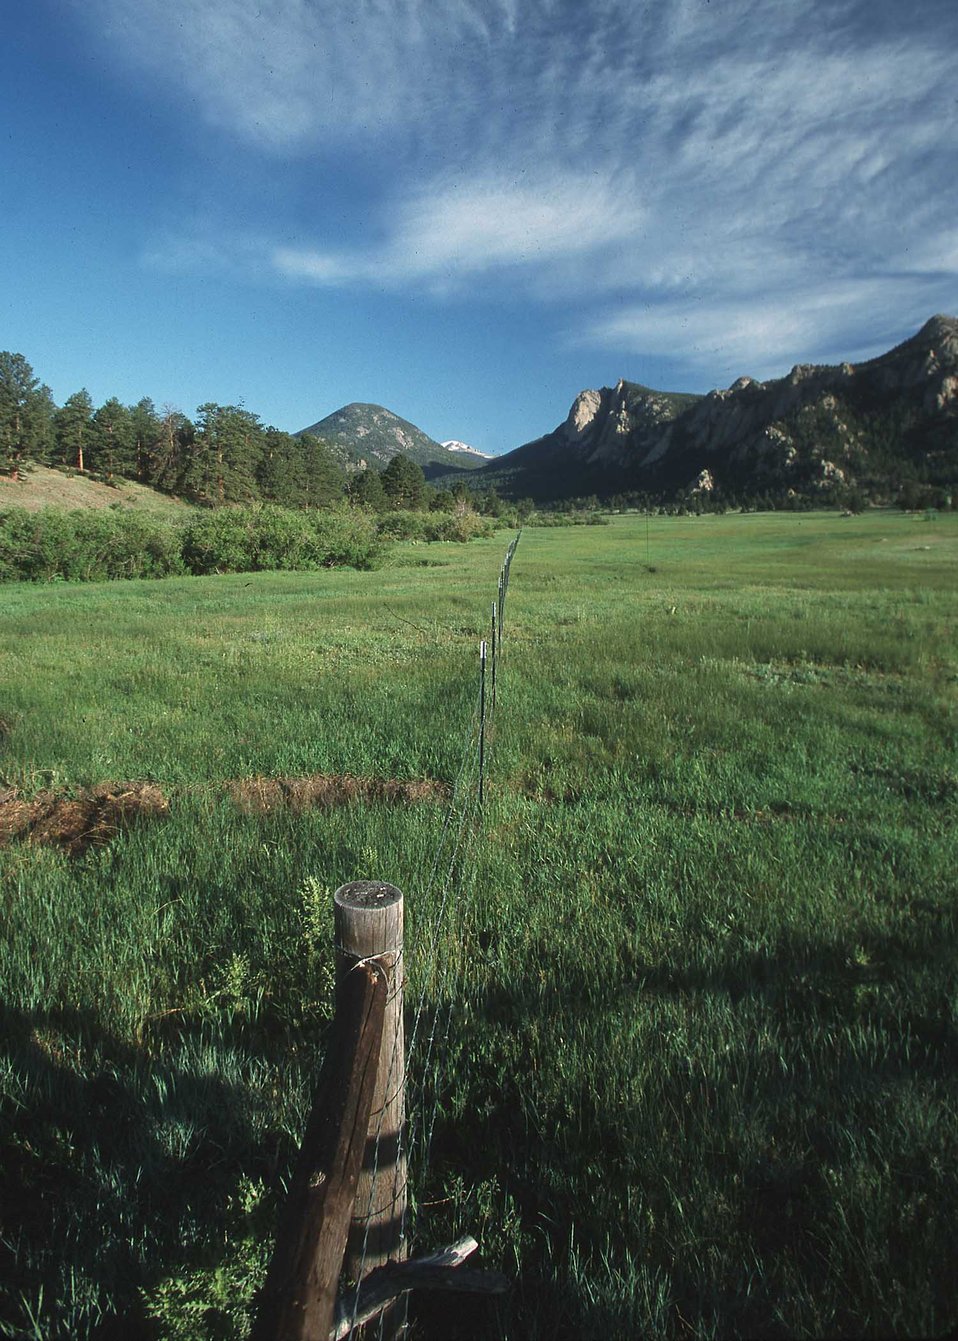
Riparian Pasture-Spanish Peaks area, CO.